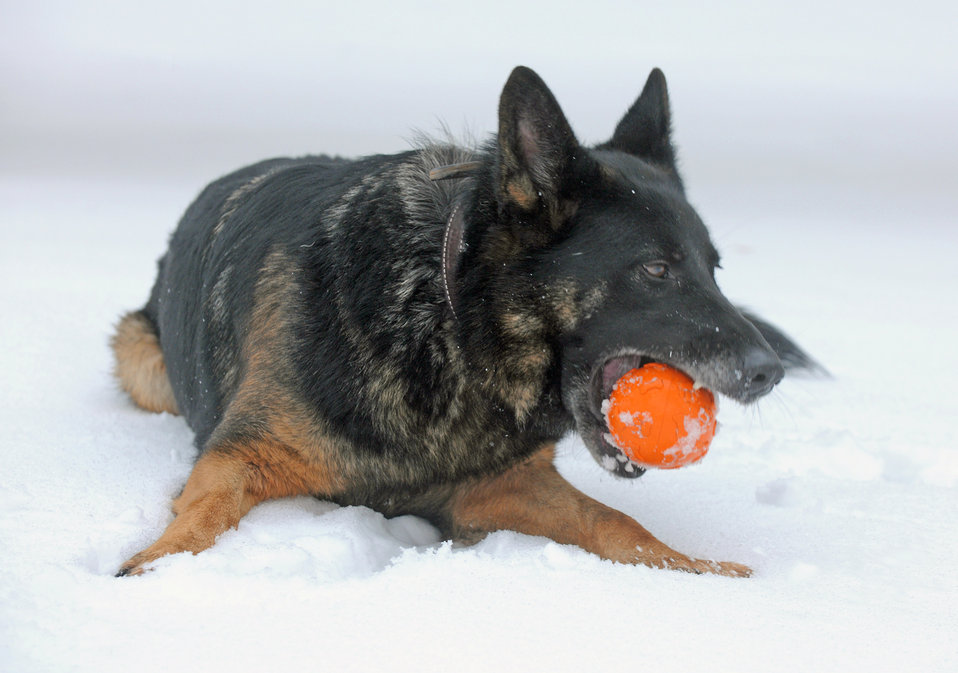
Military working dogs

Robson, a 5-year-old German shepherd, plays fetch with Staff Sgt. David Simpson Dec. 29, 2010, at the 52nd Security Forces Squadron military working dog facility at Spangdahlem Air Base, Germany. Handlers give their dogs time to play outside to help them acclimate to cold German winters and harsh conditions in which they must work. Sergeant Simpson is a 52nd SFS military-working-dog handler.